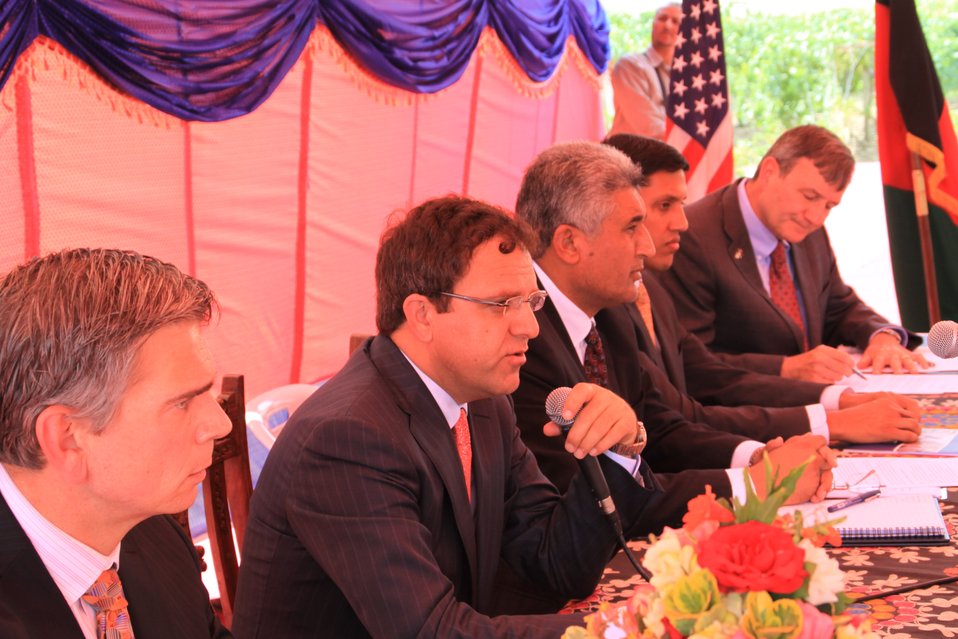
Badam Bagh Farm